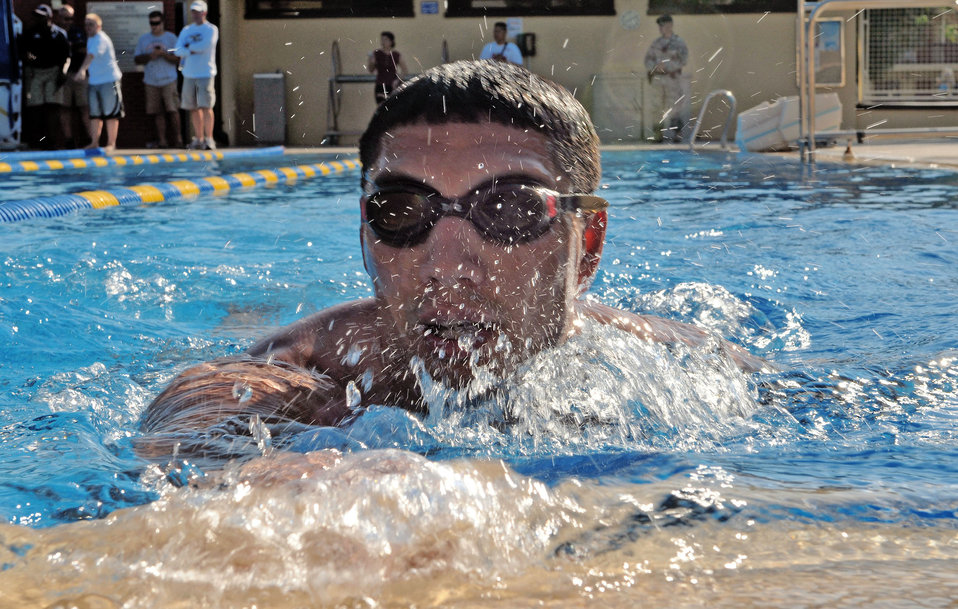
Incirlik Triathlon

Jon Billman, 817th Expeditionary Airlift Squadron, pushes the boundary of his endurance during the swimming event of the Sprint Triathlon held recently at Incirlik Air Base, Turkey. Thirty-eight Airmen, civilians and family members participated in the competition. The triathlon added a twist to classic triathlon because the order of events was reversed, starting with the run, then the bike and swim instead of the classic swim, bike and run.